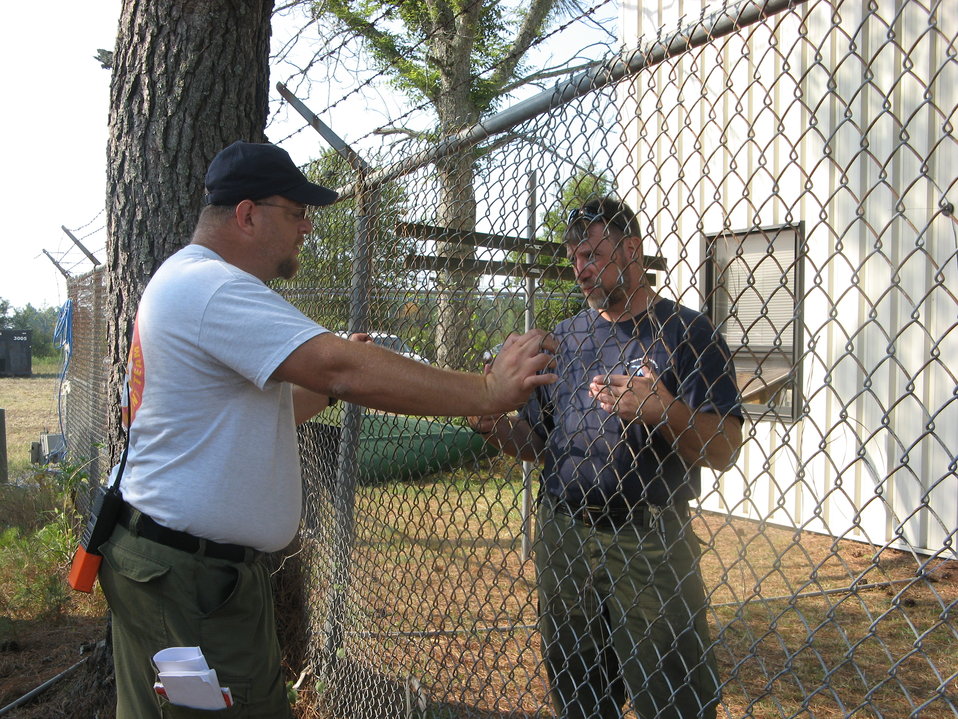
Good neighbors

Suffolk, VA, August 2011: Operations Chief trainee Kyle Smith (left) talks with Fire Management Officer Tim Craig at the command post of the Lateral West Fire on Great Dismal Swamp National Wildlife Refuge.